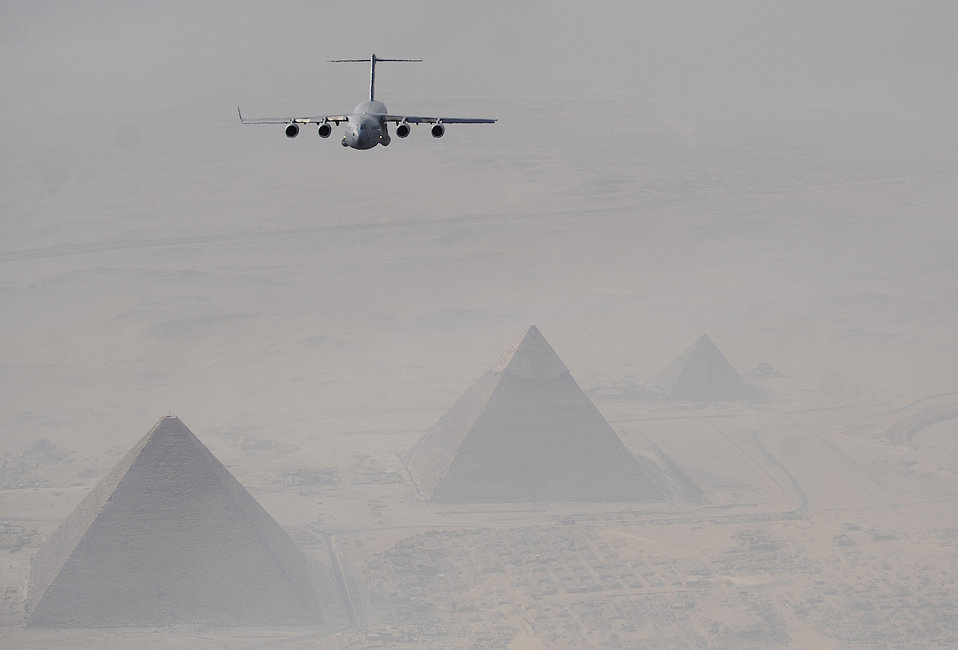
Pyramid power

A C-17 Globemaster III flies over the Pyramids of Giza Oct. 15, 2009, during Exercise Bright Star. Bright Star is a joint international military airdrop exercise that strengthens and enhances the cohesiveness of each country's participating forces. The C-17 crew is from the 437th Airlift Wing at Charleston Air Force Base, S.C.